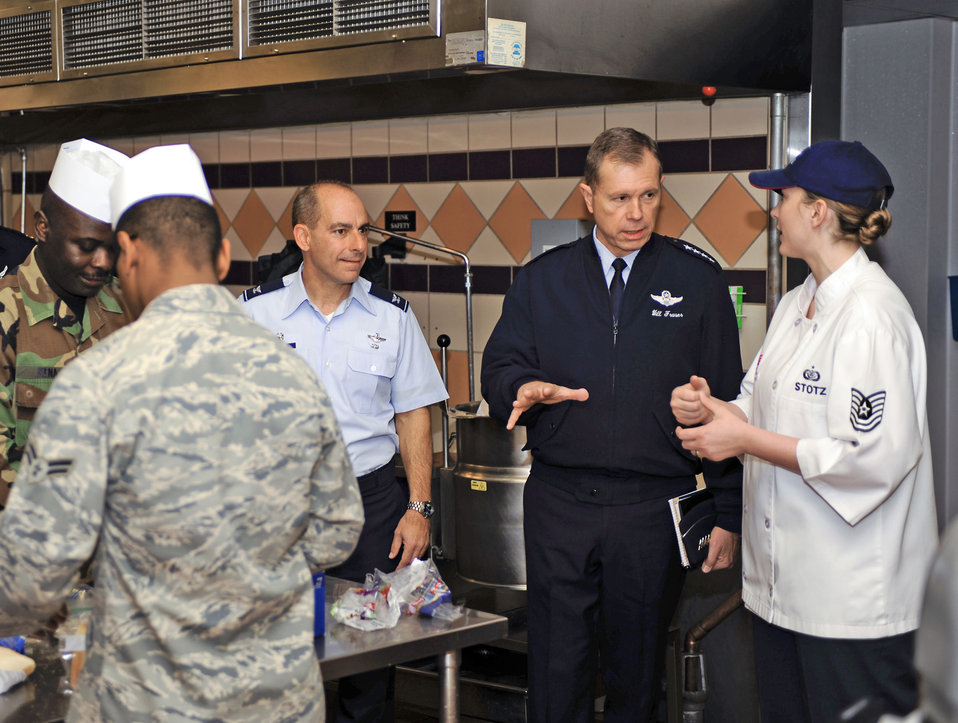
Air Combat Command leader visits Holloman Airmen

Gen. William M. Fraser III receives a description of the kitchen and food preparation area of the Shifting Sands Dining Facility by Tech. Sgt. Joya Stotz Feb. 22, 2010, at Holloman Air Force Base, N.M. General Fraser is the commander of Air Combat Command. Sergeant Stotz is assigned to the 49th Force Support Squadron.